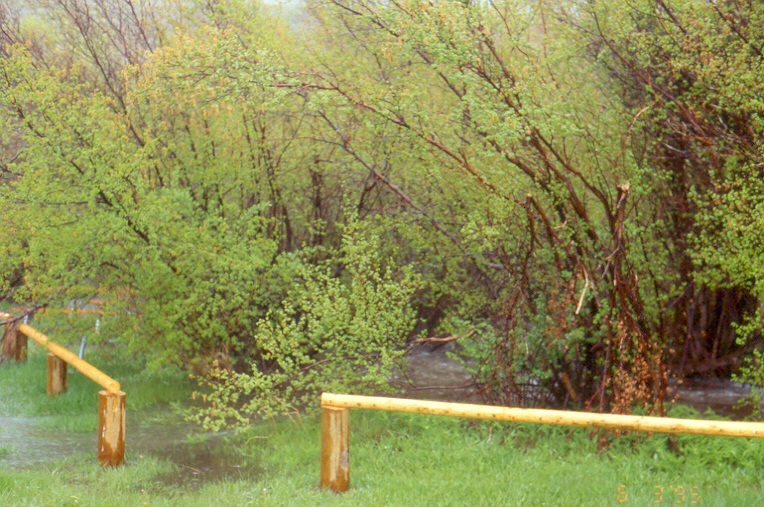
Recreation Site Salmon Field Office UCSC Upper Columbia Salmon Clearwater District